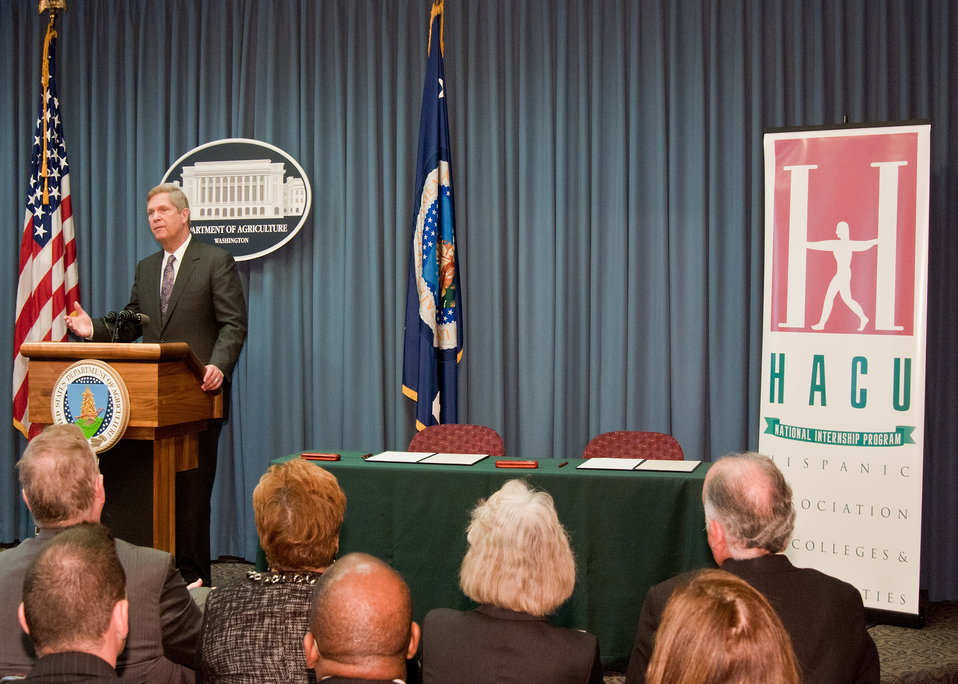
Agriculture Secretary Tom Vilsack speaks of the importance of education to the United States and the relationship between the United States Department of Agriculture and the Hispanic Association of Colleges and Universities prior to signing a Memorandum of Understanding for the continuing partnership between USDA and HACU at the United States Department of Agriculture in Washington, DC, Friday, March 18, 2011. The Hispanic Association of Colleges and Universities (HACU) is a non-profit organization whose mission is to promote the success of Hispanics in higher education. In the United States, HACU represents more than 400 higher education institutions that together enroll two thirds of all Hispanics in higher education. This competitive USDA/HSI grant program is designed to promote and strengthen the ability of Hispanic Serving Institutions to carry out education programs that attract, retain, and graduate outstanding students capable of enhancing the nation's food and agricultural scientific and professional work force.